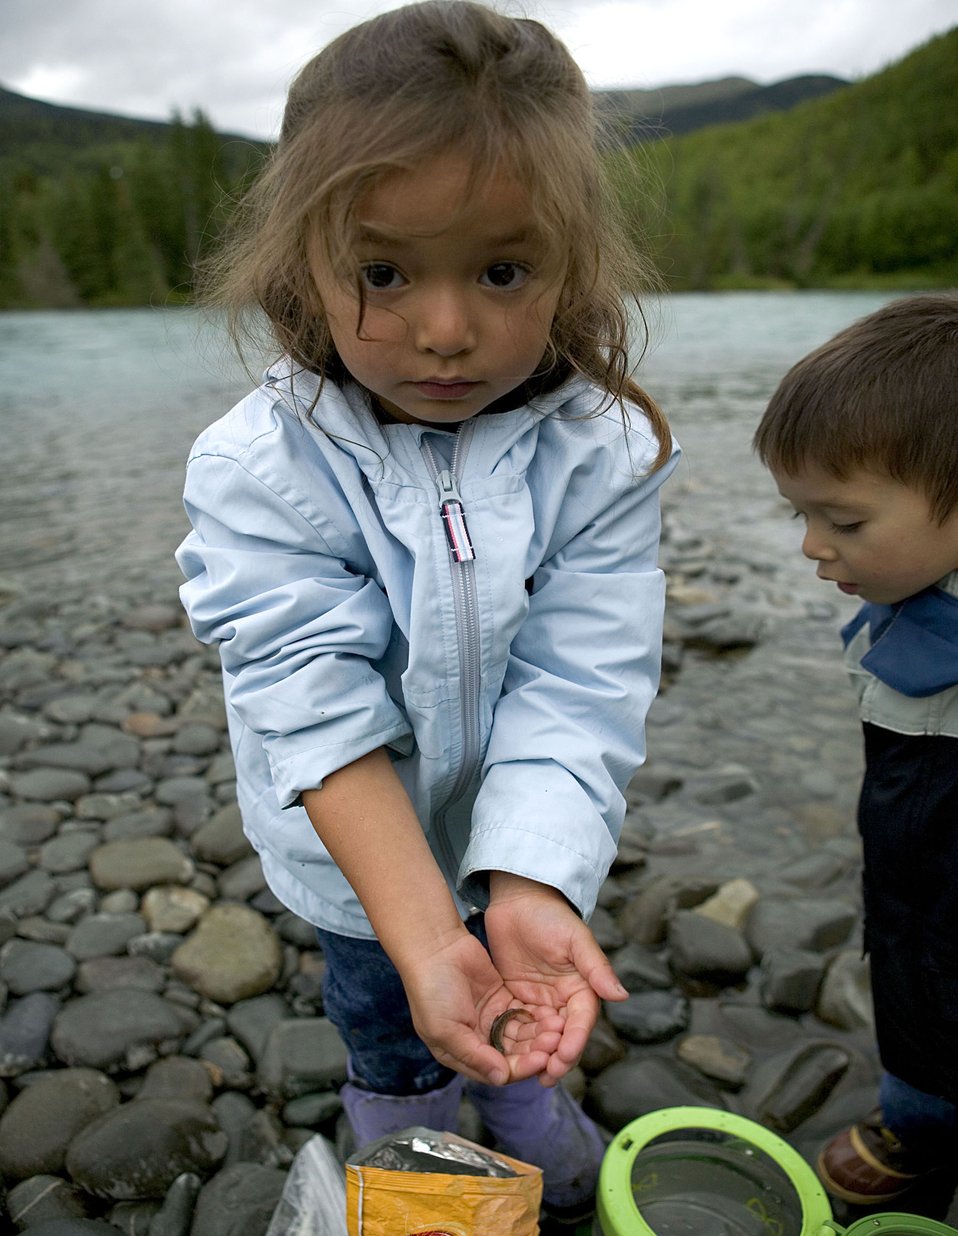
A day on the river

Little girl holds a minnow in her hand as a young boy looks on.